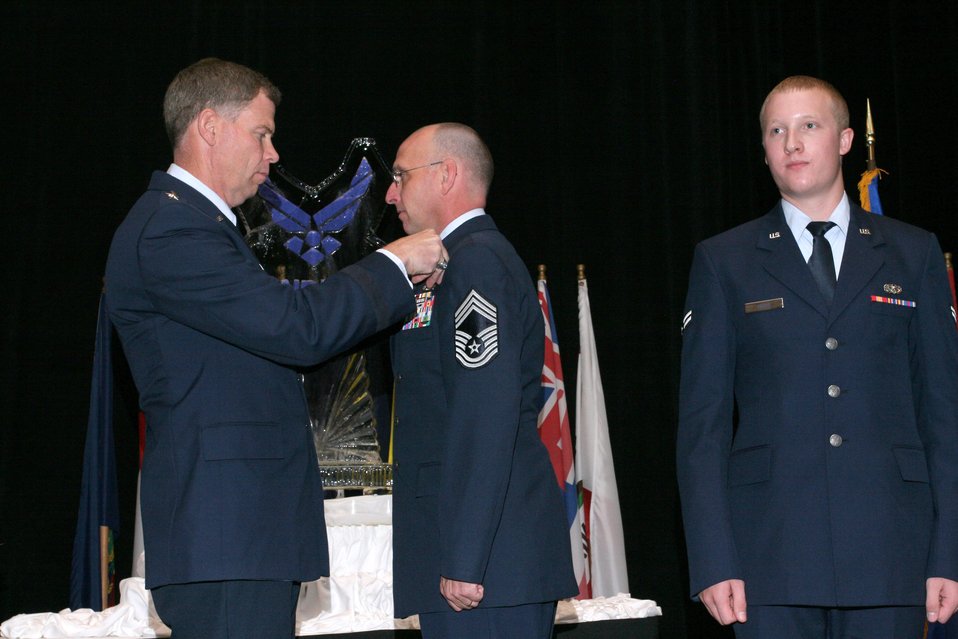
Airmen awarded new readiness occupational badges

Maj. Gen. Del Eulberg, the Air Force civil engineer, pins the first civil engineer readiness occupational badge on Chief Master Sgt. Mike Connors during a ceremony at the Emergency Services Symposium in Dallas, while Airman 1st Class Adam Hills waits for his badge. Chief Connors is the senior-ranking enlisted member in the Air Force civil engineer readiness career field and Airman Hills is the most recent graduate of the civil engineer readiness course.